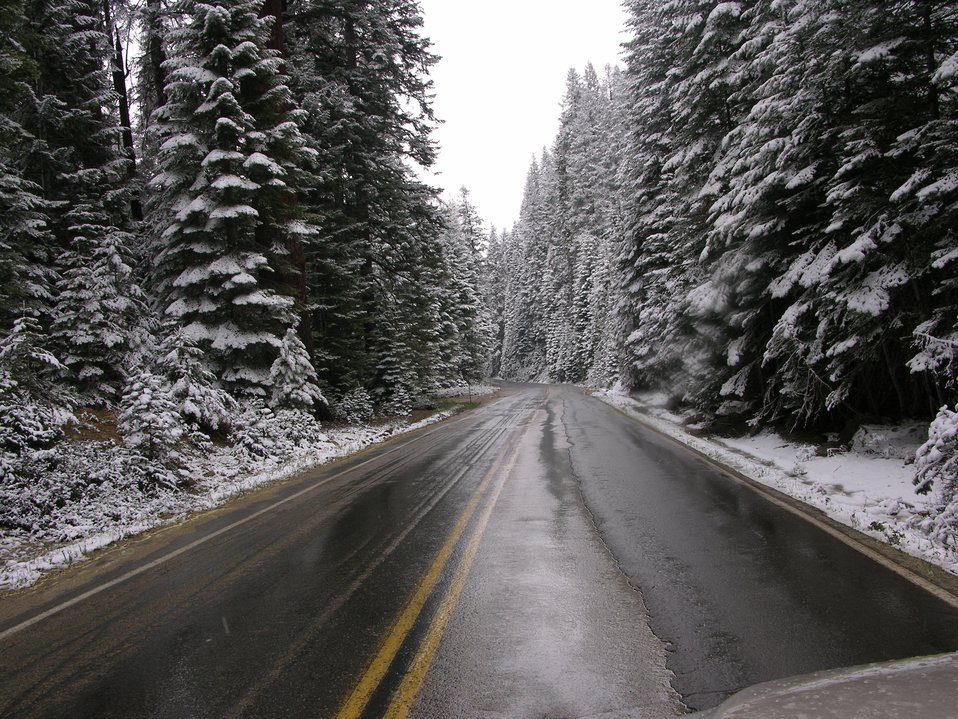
Snow in Sequoia National Park.